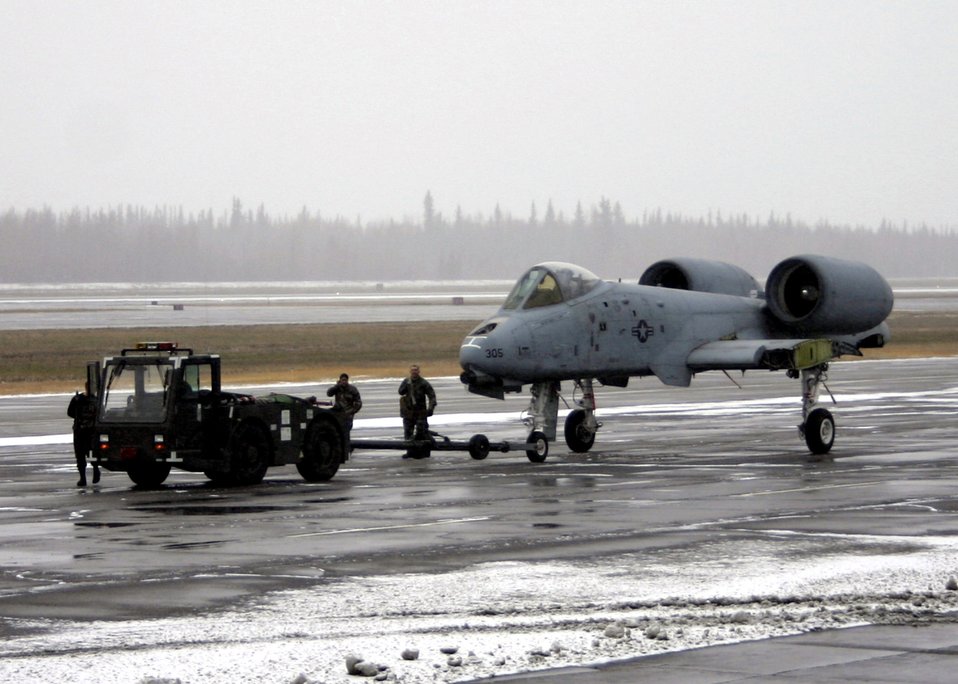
Eielson's last A-10 nestles into new home

An A-10 Thunderbolt II is towed toward a C-5 Galaxy for transport to the Robins Air Force Base, Ga. Museum of Aviation Flight and Technology Center Oct. 6 at Eielson Air Force Base, Alaska. This is the last assigned A-10 to leave Eielson AFB. The plane was inactivated in 1996 due to the Air Force's need for ground trainers, and has been used for weapons ground training ever since.